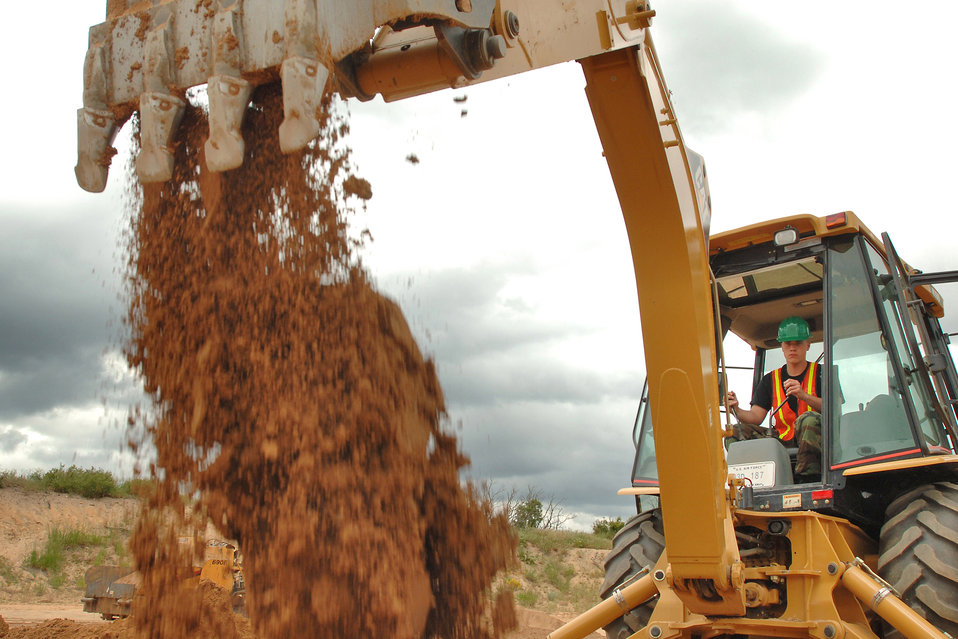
Summer lab gives cadets engineering experience

Air Force Academy Cadet 2nd Class Patrick Grandsaert operates a backhoe during the Field Engineering and Readiness Laboratory course at the Academy. The course exposes cadets to several aspects of civil engineering, including heavy equipment operation, steel bridge construction, designing and pouring concrete beams and paving portions of a road.